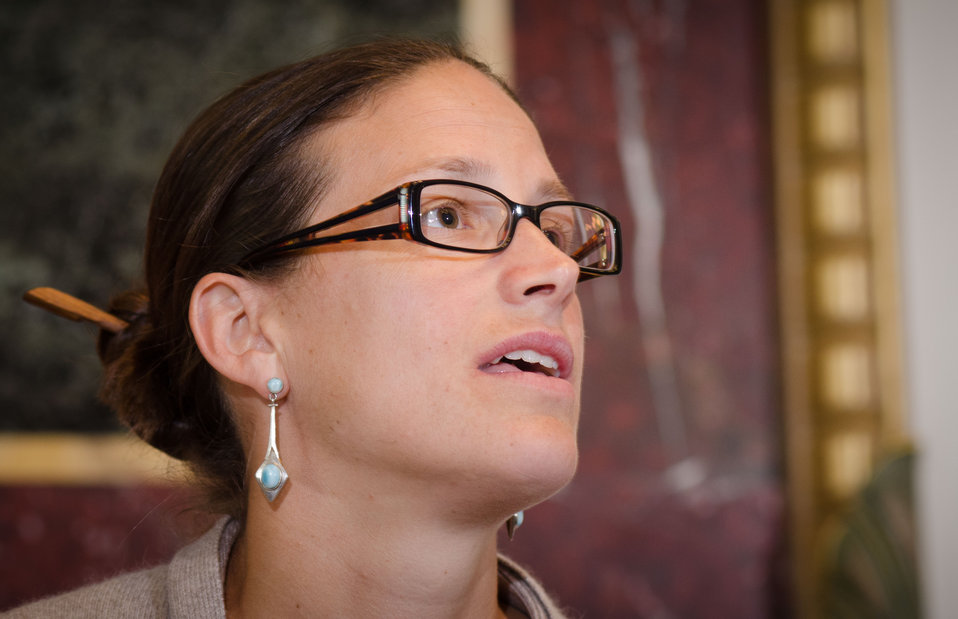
Champion of Change recipient Jessica McAtamney speaks at the Champions of Change Recognition event at the Executive Office Building in Washington, D.C. on Tuesday, Oct. 9, 2012. McAtamney is an agricultural educator at W.B. Saul High School of Agricultural Sciences in Philadelphia, PA. Jessica serves as FFA advisor to one the nation’s largest FFA chapters, assisting Saul’s fourteen agricultural educators to bring FFA alive to the urban Philadelphia chapter. As the Land Judging Career Development Event Coach and Agriscience Fair coordinator, Jessica facilitates the Chapter’s participation in local leadership events, competitions, and conferences. This is just one more chapter in Jessica’s story of public service, as she is a returned Peace Corps volunteer and a former participant in the Fulbright Japan-U.S. Teacher Exchange Program for Education for Sustainable Development.